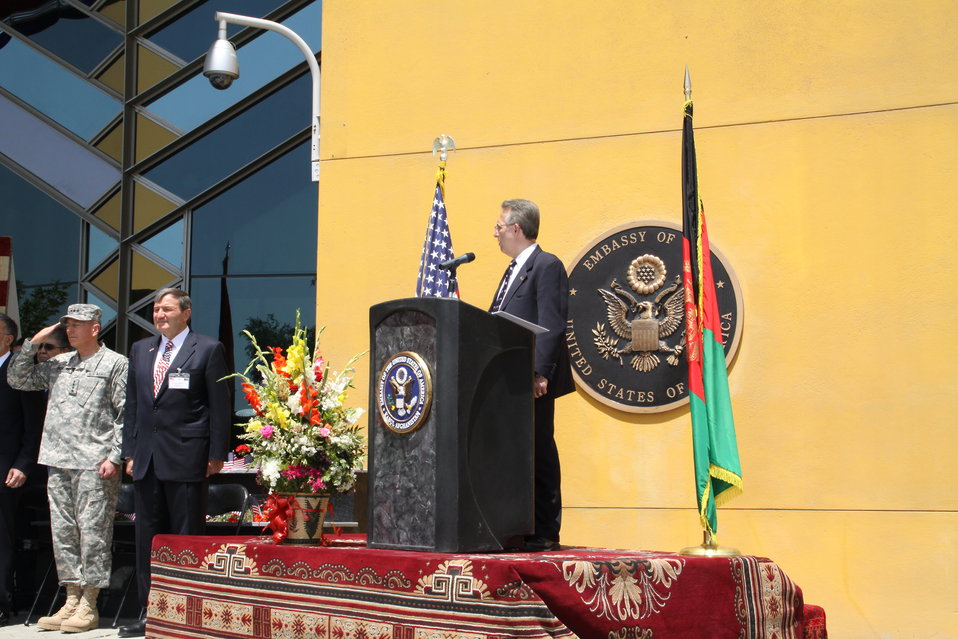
Kabul Official July 4th Celebration